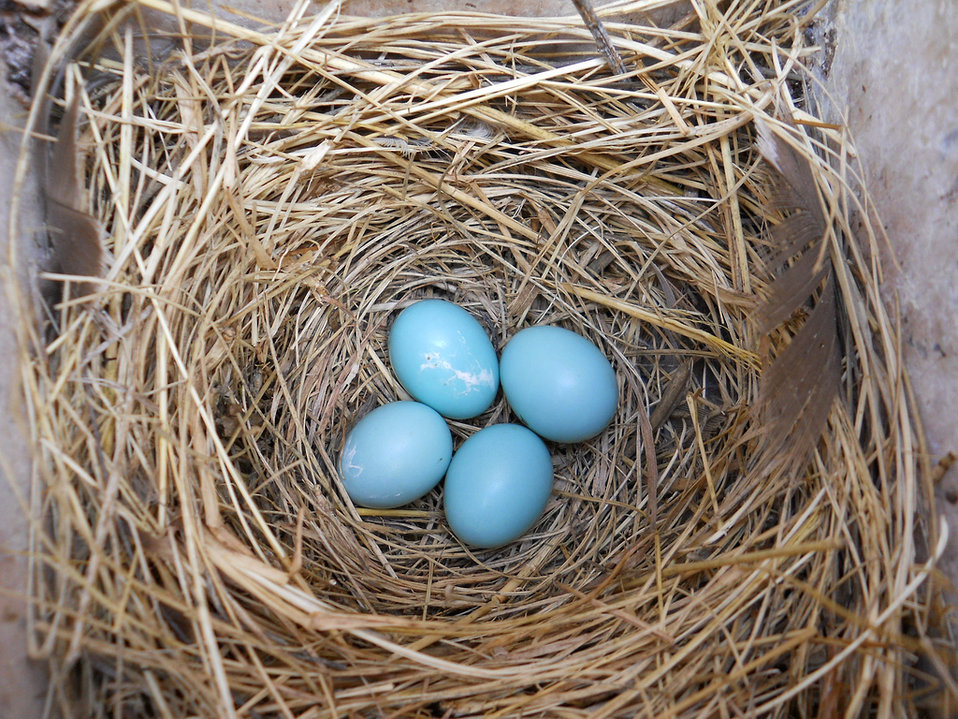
Blue Eggs in Nest Box

A peek inside this nest box reveals a sure sign of spring–four delicate bluebird eggs. Refuge volunteers monitor these nest boxes as part of a long-term citizen science program.